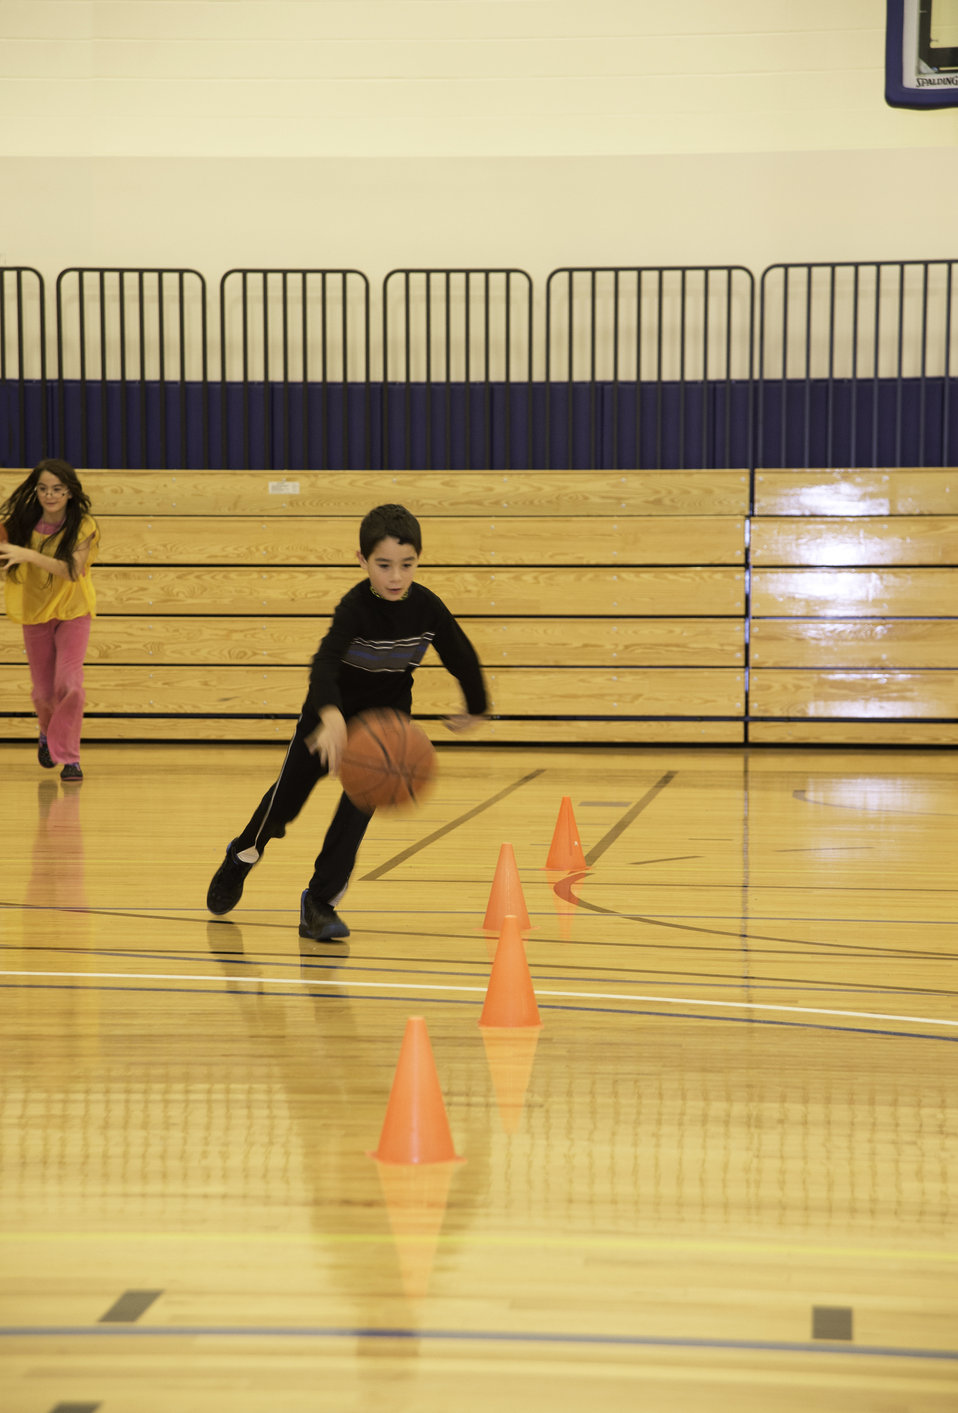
Mohegan youth enrolled in after-school program participate in physical activities at the Mohegan Tribe Community Center and Government Building in Uncasville, CT on Nov. 18, 2013. A U.S. Department of Agriculture (USDA) Rural Development (RD) Community Facility Loan was provided to the Mohegan Tribe for the construction of the Mohegan Tribe Community Center and Government Building in Uncasville, CT. USDA’s RD Community Facilities Programs makes and guarantees loans to develop essential community facilities in rural areas and towns of up to 20,000 in population. Loans and guarantees are available to public entities such as municipalities, counties, parishes, boroughs, and special-purpose districts, as well as to non-profit corporations and tribal governments. The 160,000 square foot building Center hosts an exhibit celebrating federal recognition, history of Mohegan Chiefs, a new Library and Archives space, new Arts and Crafts room, a new gymnasium, and a new community room to enjoy food and family. The Center will continue the Tribe’s plan for growth and meeting the needs of its members.